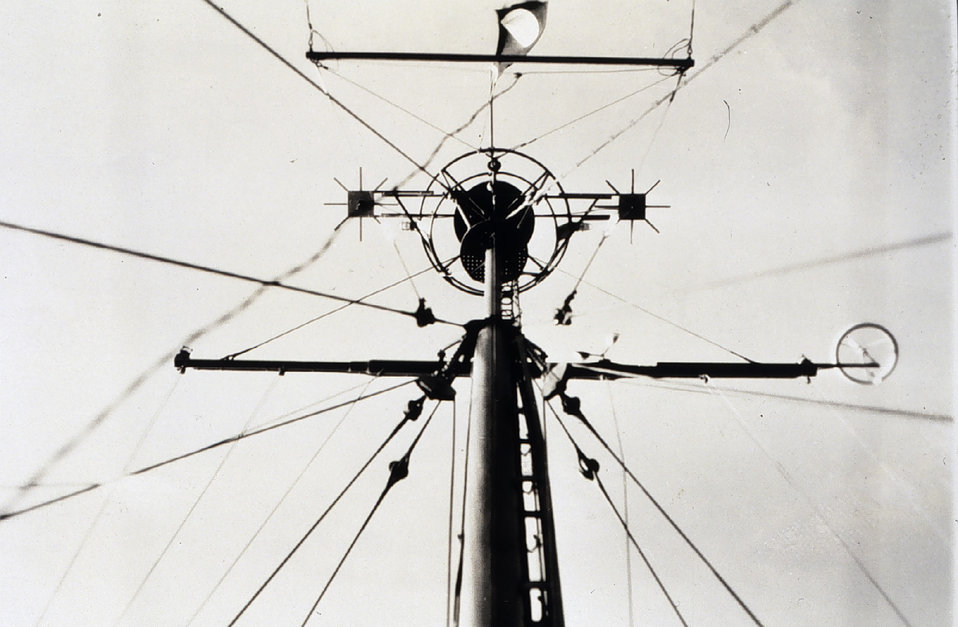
Shipboard Shoran antenna from below. On EXPLORER